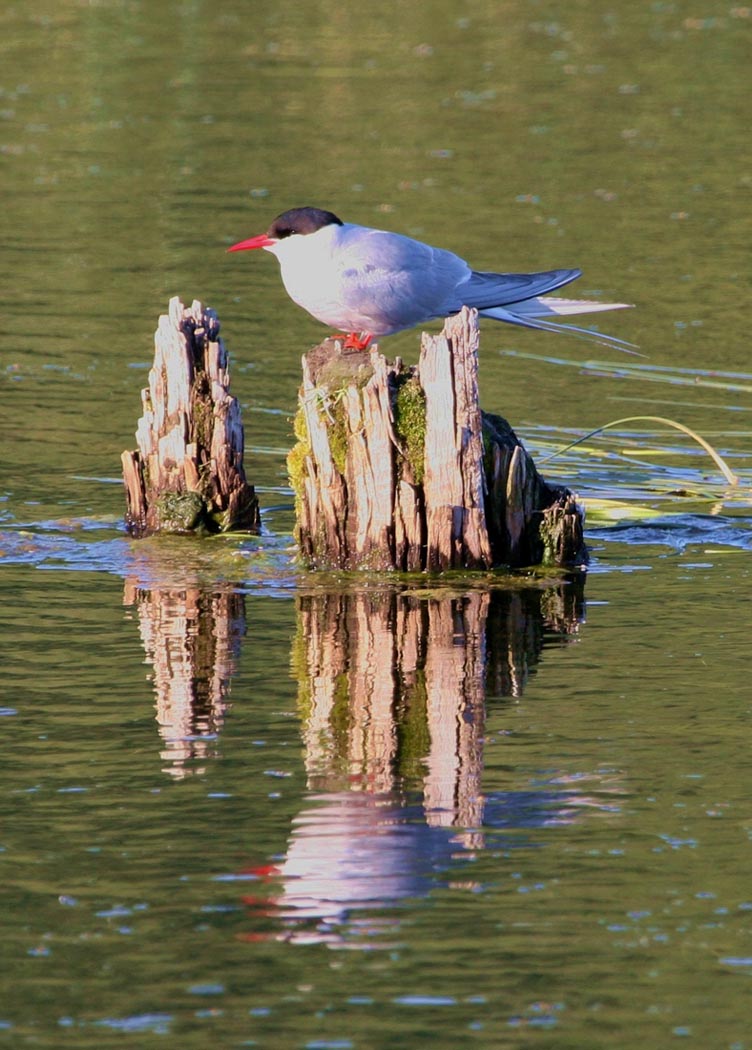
Tern

Arctic tern.